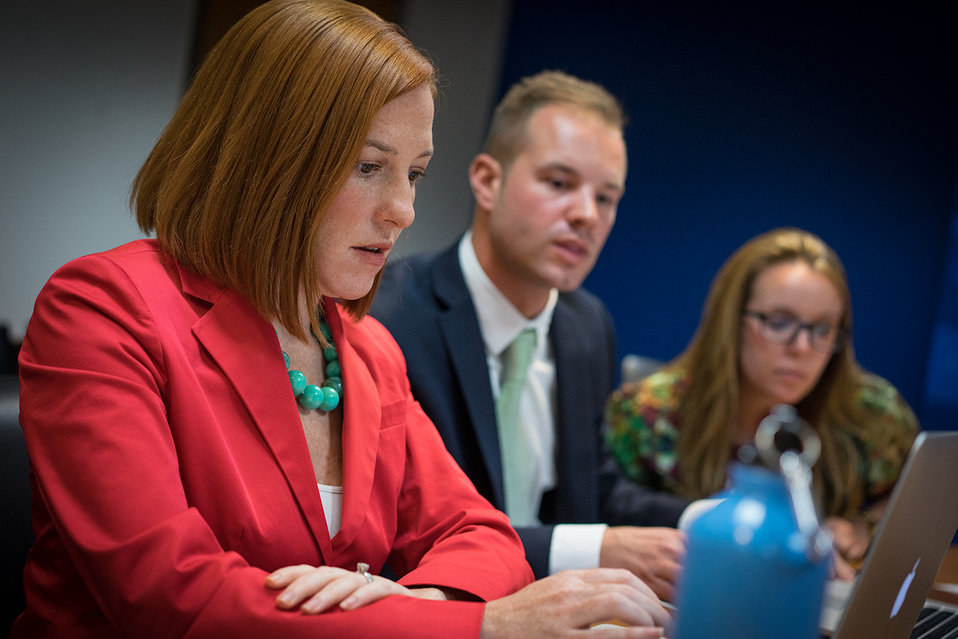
Spokesperson Psaki Responds to #AskJen Questions

State Department Spokesperson Jen Psaki responds to your questions in a Twitter Q and A on U.S. foreign policy at the U.S. Department of State in Washington, D.C., on April 21, 2014.